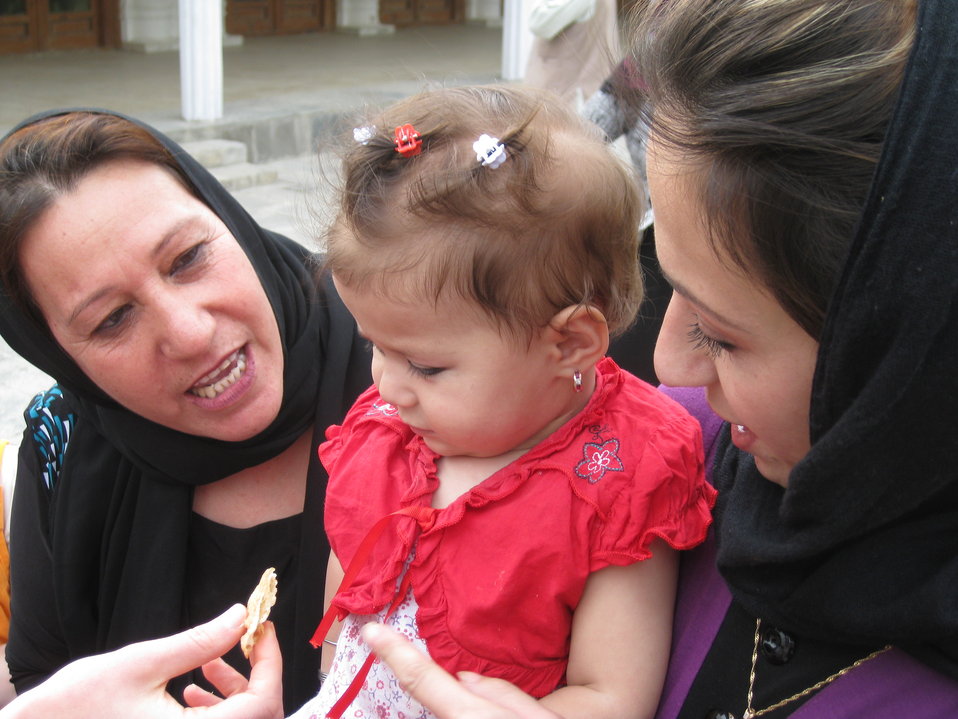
Afghan Youth Voices 091